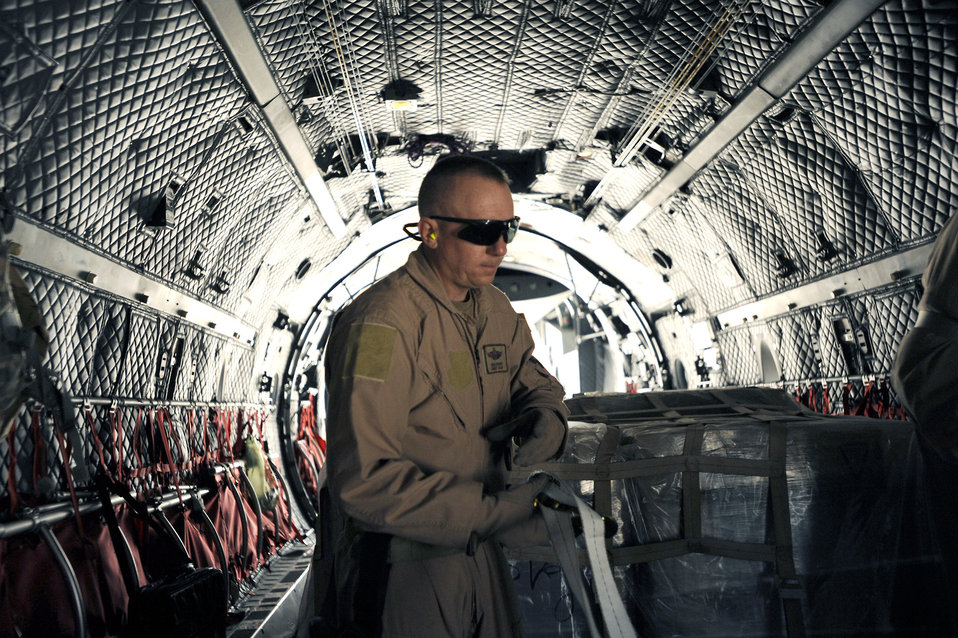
Operation Enduring Freedom

Senior Master Sgt. Mike Crews secures all loose cargo aboard a C-27 Spartan prior to takeoff May 15, 2010, at Kabul International Airport, Afghanistan. Sergeant Crews is a C-27 loadmaster adviser assigned to the 538th Air Expeditionary Advisory Squadron.